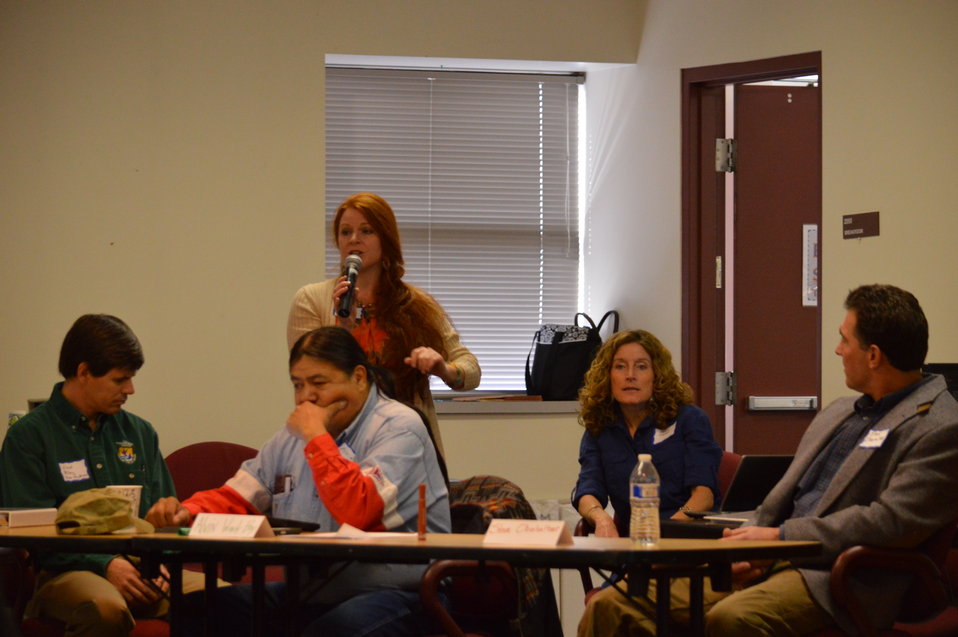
Eagle Summit III

Panel at the Eagle Summit III in Denver, Colorado on March 20, 2014 at the Rocky Mountain Arsenal National Wildlife Refuge.